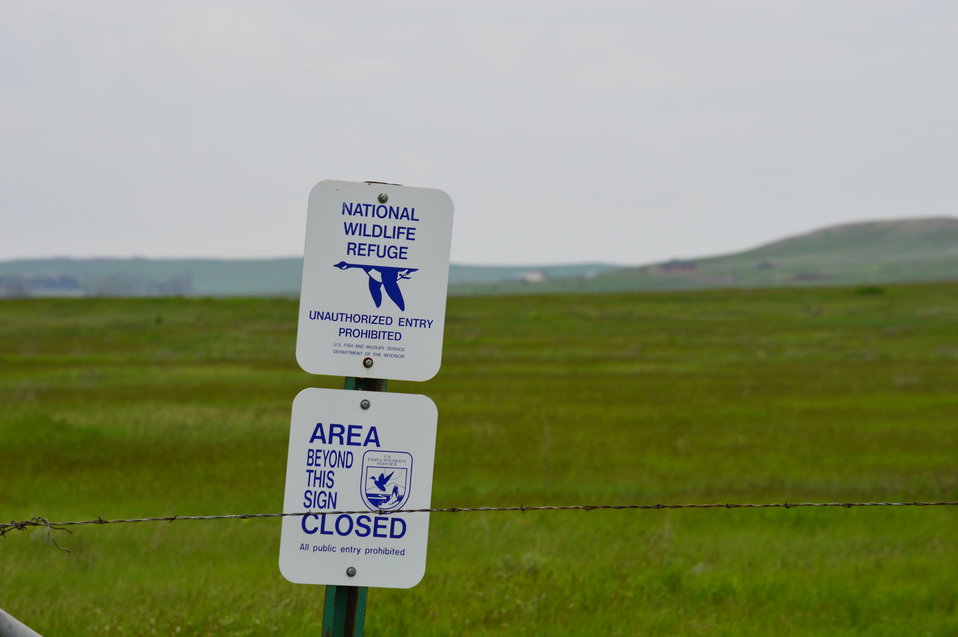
NWR sign

Scenery and wildlife at Lake Ilo National Wildlife Refuge in North Dakota